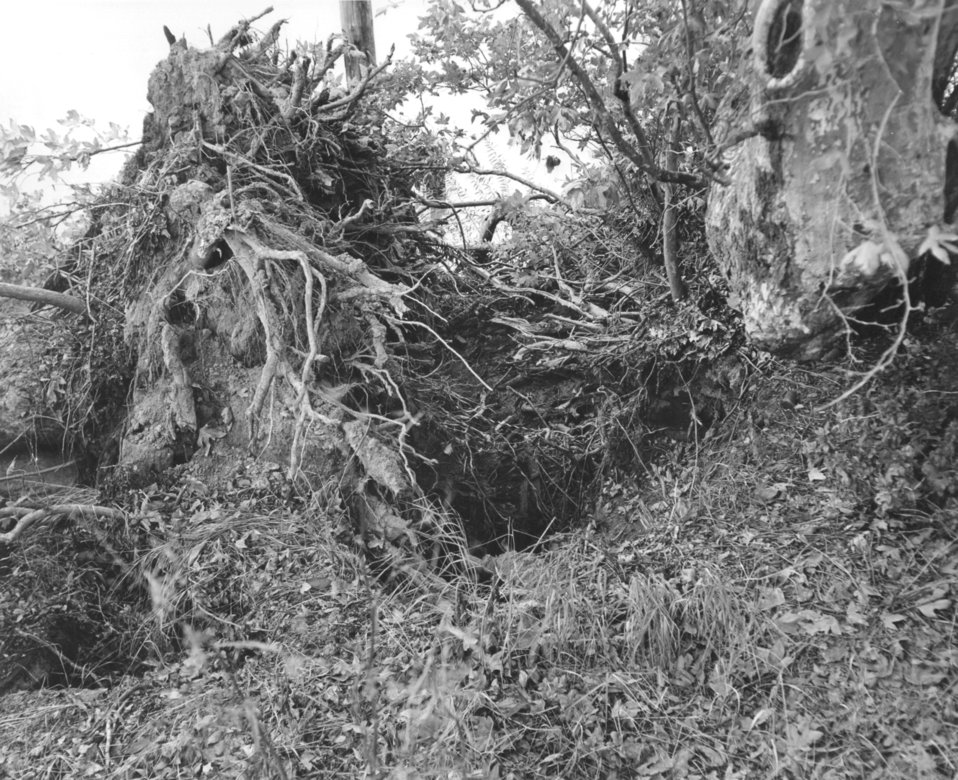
Toppled sycamore tree on Sacramento River levee

An historic photo of a toppled Sycamore tree on a Sacramento River levee near Clarksburg, Calif., shown in October 1962.